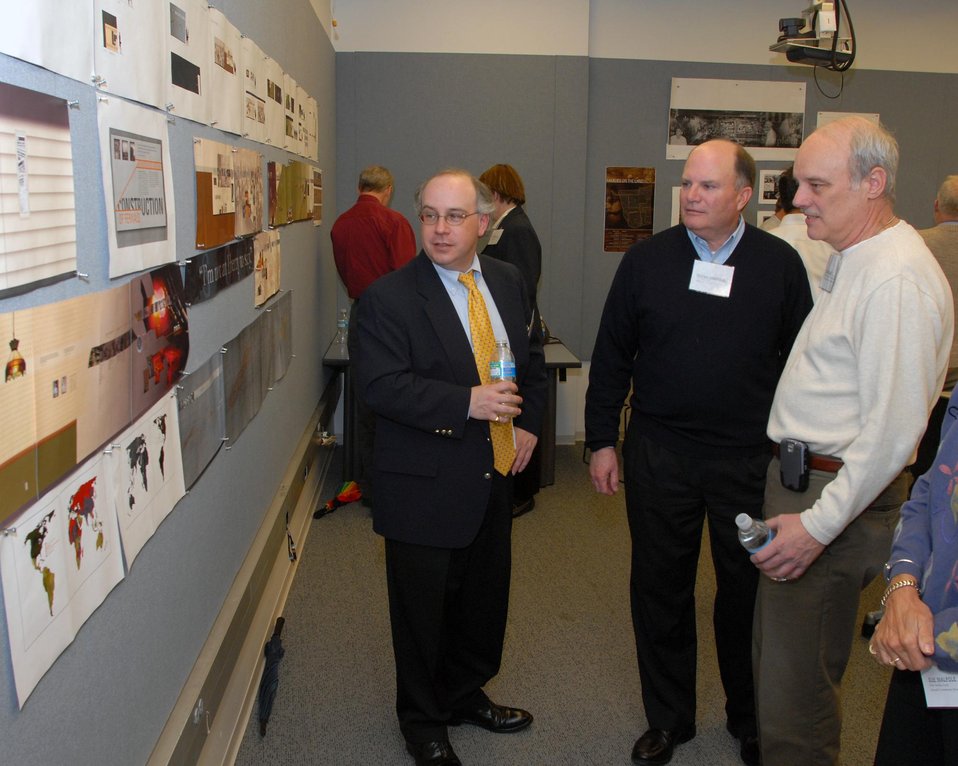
Fernald Preserve Visitor Center.